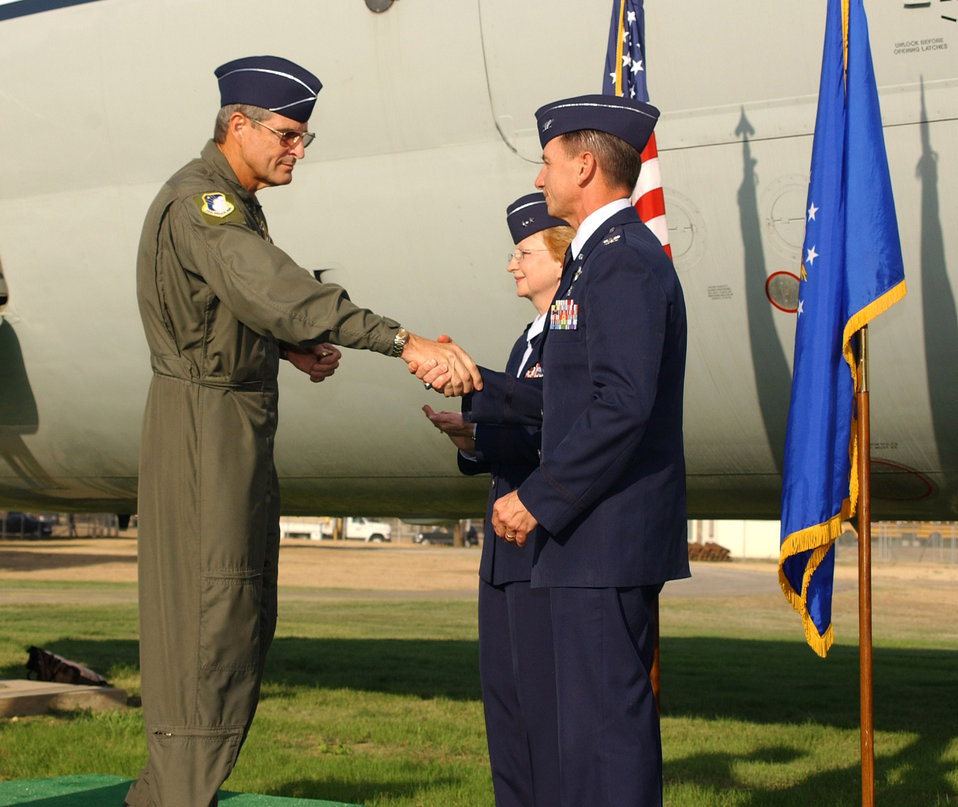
Wilford Hall holds dedication ceremony for C-9 Nightingale

Brig. Gen. David Young, 59th Medical Wing commander, presents wing coins to Maj. Gen. Melissa Rank, assistant Air Force surgeon general for medical force development and nursing services, and Col. (Dr.) Byron Hepburn, command surgeon for Headquarters Air Mobility Command, during the C-9 dedication ceremony at Lackland Air Force Base, Texas, Aug. 31.